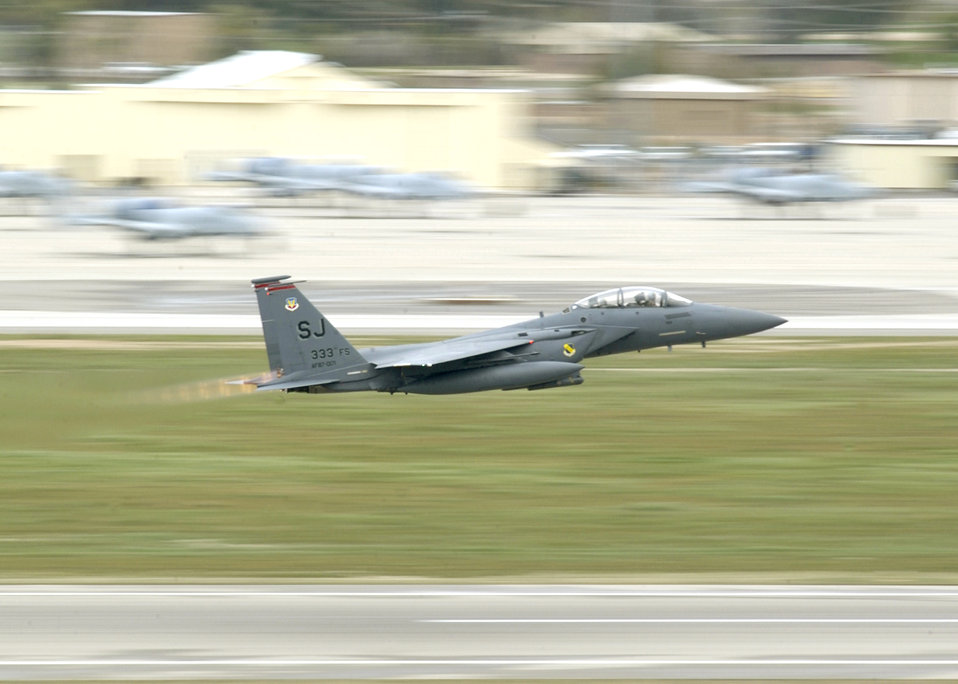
Cleared for takeoff

DAVIS-MONTHAN AIR FORCE BASE, Ariz. -- An F-15E Strike Eagle takes off during the 2005 Heritage Flight Conference here. The Heritage Flight program was established in 1997 supporting the Air Force's 50th anniversary. It involves today's state-of-the-art fighters flying in close formation with World War II and Korean War vintage fighters. The flight is designed to safely display the evolution of U.S. Air Force airpower and support Air Force's recruiting and retention efforts.